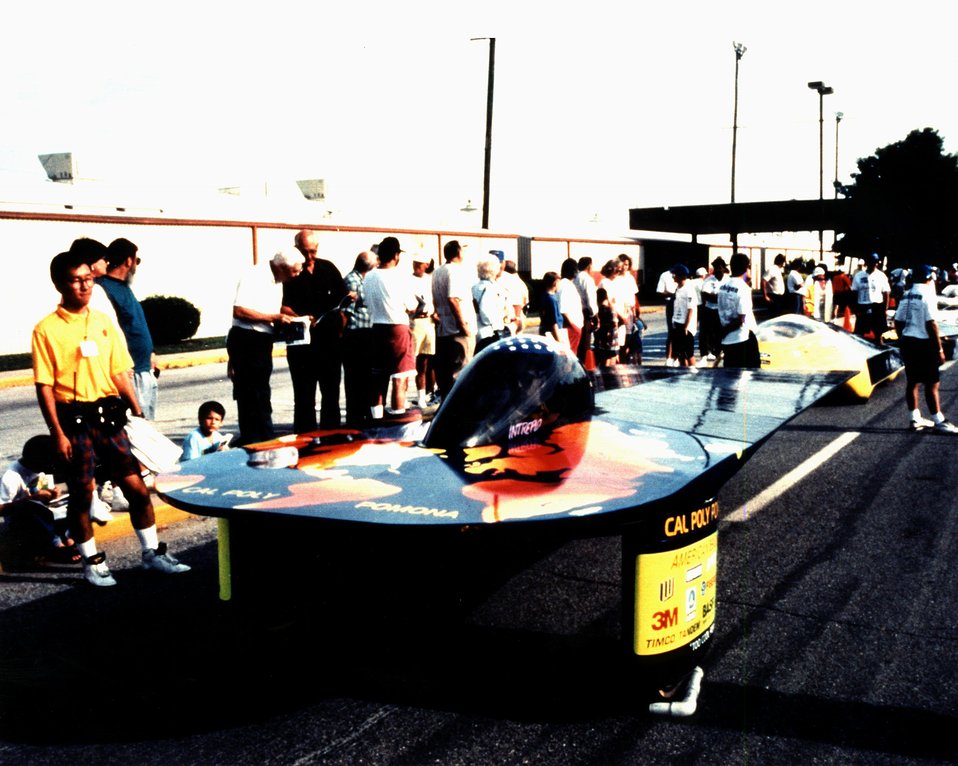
INTREPID, SECOND PLACE WINNER, ENTERED BY CALIFORNIA STATE POLYTECHNIC UNIVERSITY, POMONA, CA. THE TEAM IS COMPOSED OF PRIMARILY UNDERGRADUATE STUDENTS AND FACULTY.